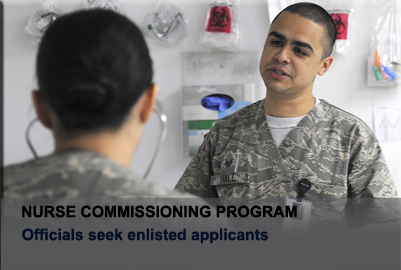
Nurse commissioning program